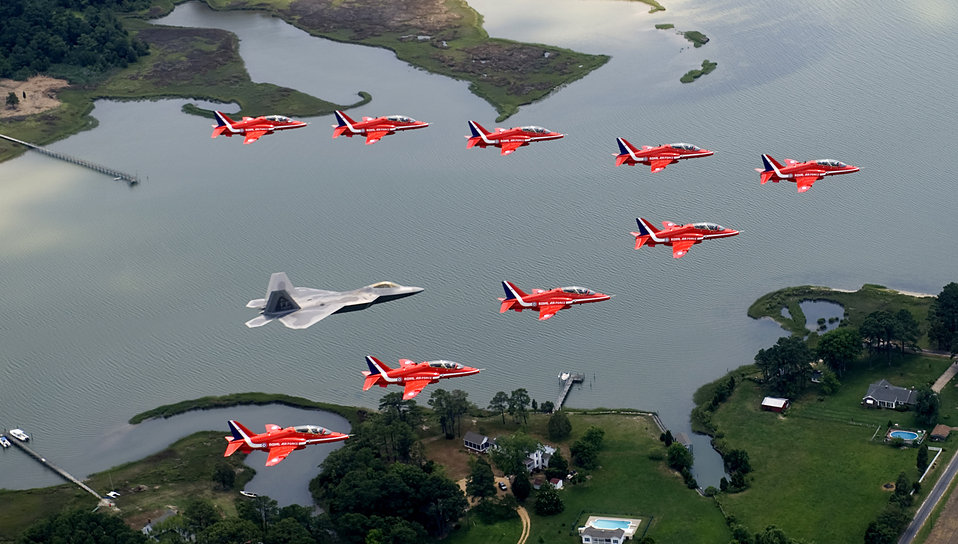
Raptor joins Red Arrows

Maj. Paul Moga flies in formation in an F-22 Raptor with the Royal Air Force Aerobatic Team, The Red Arrows, during an afternoon practice flight June 18 at Langley Air Force Base, Va. The aircraft will perform at AirPower over Hampton Roads, the Langley AFB airshow, which is scheduled for June 20 to 22. Major Moga is an F-22 Demonstration Team pilot.